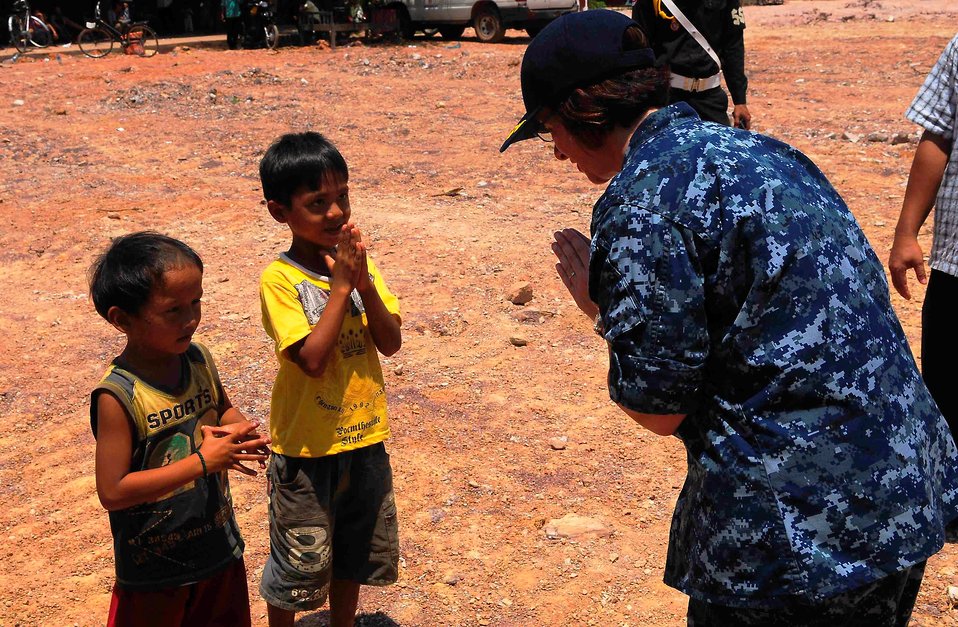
Two Cambodian Boys Show Gratitute to PP2010 Commander, Capt. Franchetti

Two Cambodian boys thank the commander of Pacific Partnership 2010, Capt. Lisa M. Franchetti, for a soccer ball they received from her during her visit to the medical civic action program in Rattanakiri, Cambodia, on June 18, 2010.